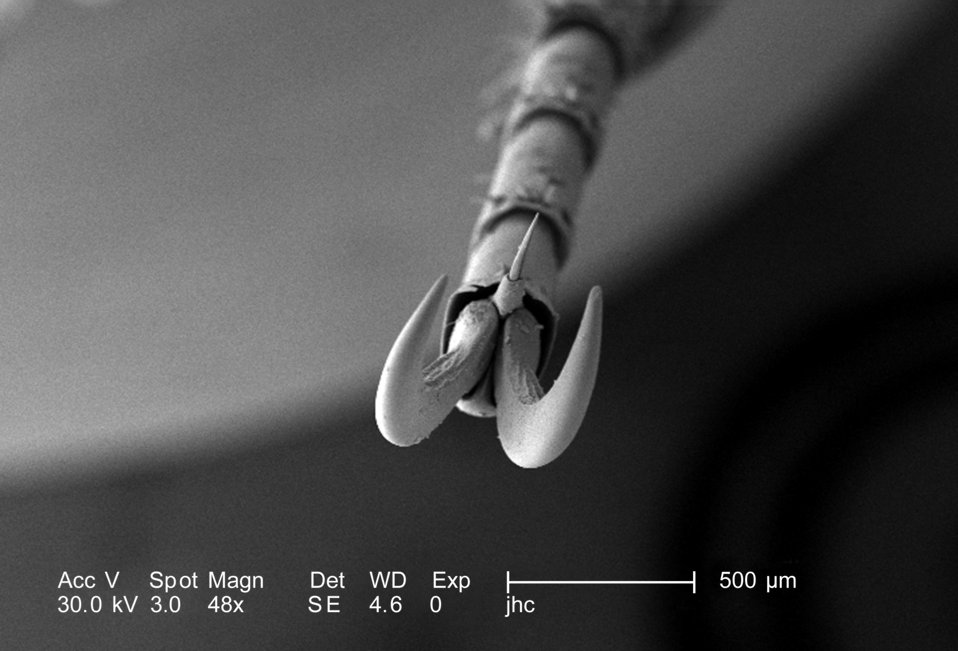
At a magnification of 188X, half that of PHIL 9947, this scanning electron micrograph (SEM) depicted a head-on view of the distal clawed tip of an adult 'figeater' beetle's, Cotinis mutabilis leg. Phil 9943, 9944, and 9945 depict this anatomical appendicular relationship from its side. The insect leg is comprised of a variable number of segments, however, there are usually six which predominate, including the most proximal coxa, i.e., attaching the leg to the thorax, followed by the trochanter, femur, tibia, tarsus, and pretarsus, which in the case of this beetle is a claw with its spiked empodium.